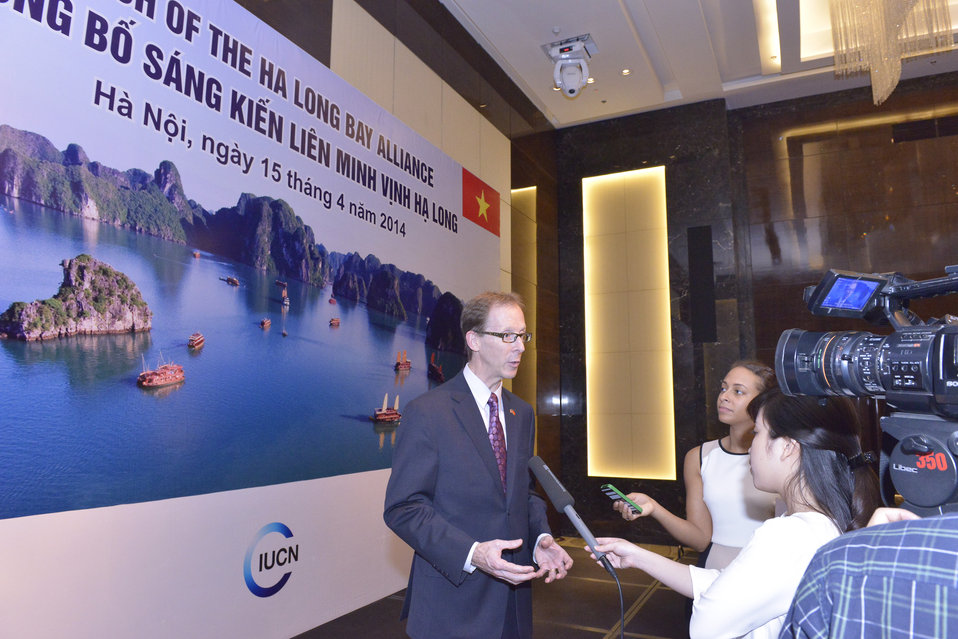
USAID Vietnam Mission Director speaks to VTC10 about the alliance.

Hanoi, April 15, 2014.